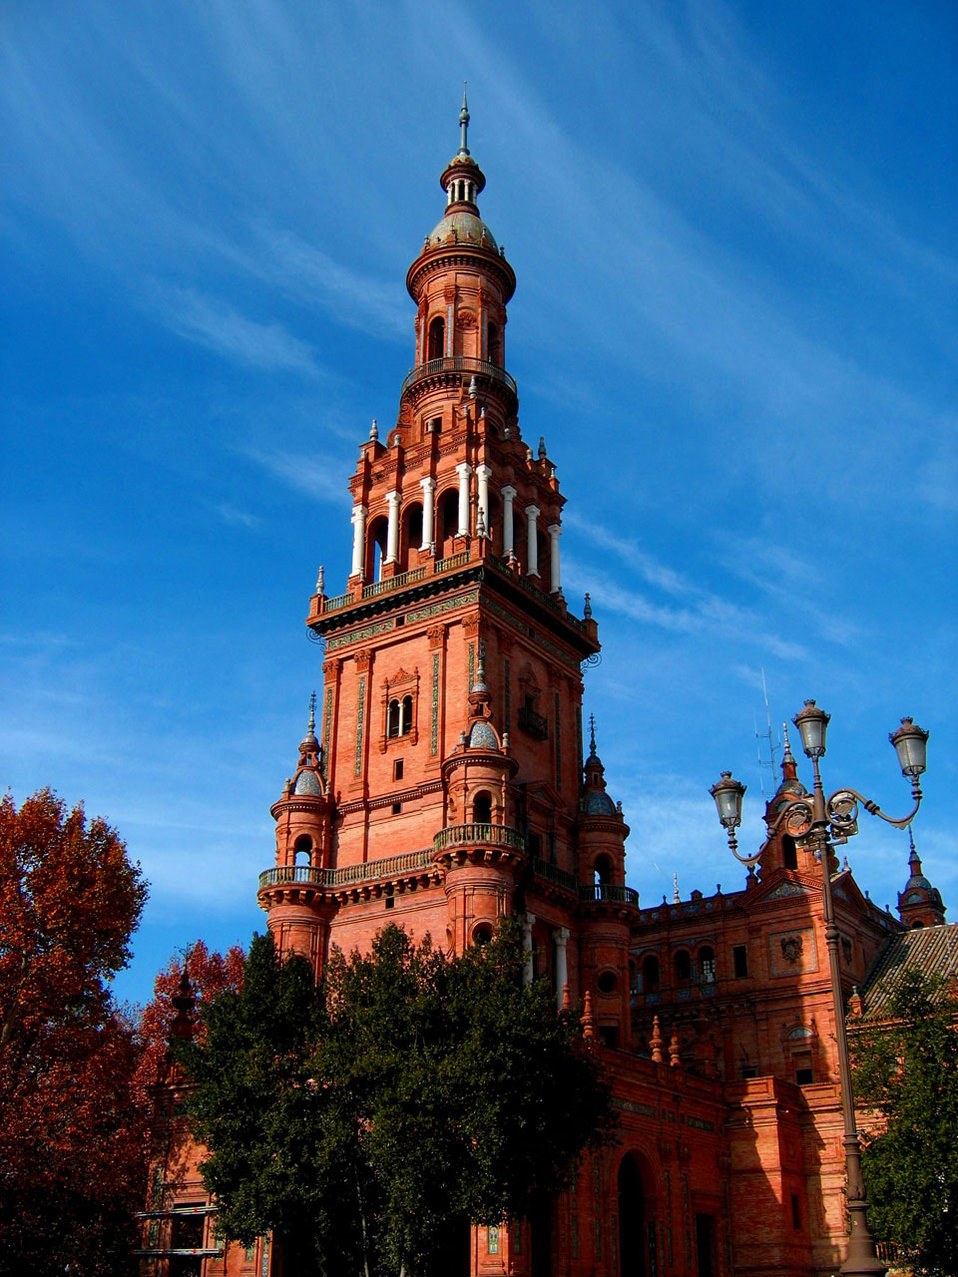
Plaza de espana.